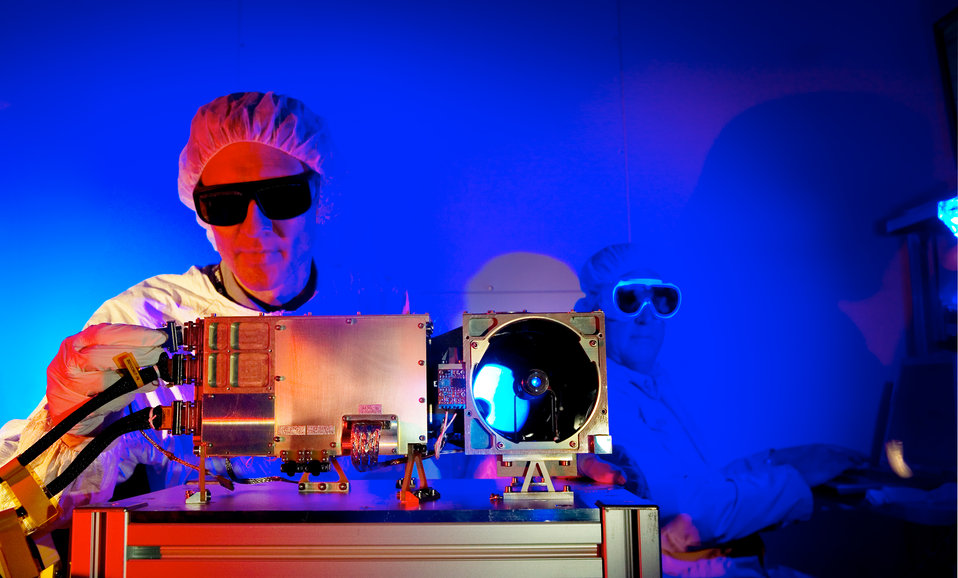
Scientists at Los Alamos National Laboratory (LANL) remove the laser safety plug on the ChemCam mast unit, which traveled to Mars in 2009 on the Science Laboratory Rover.